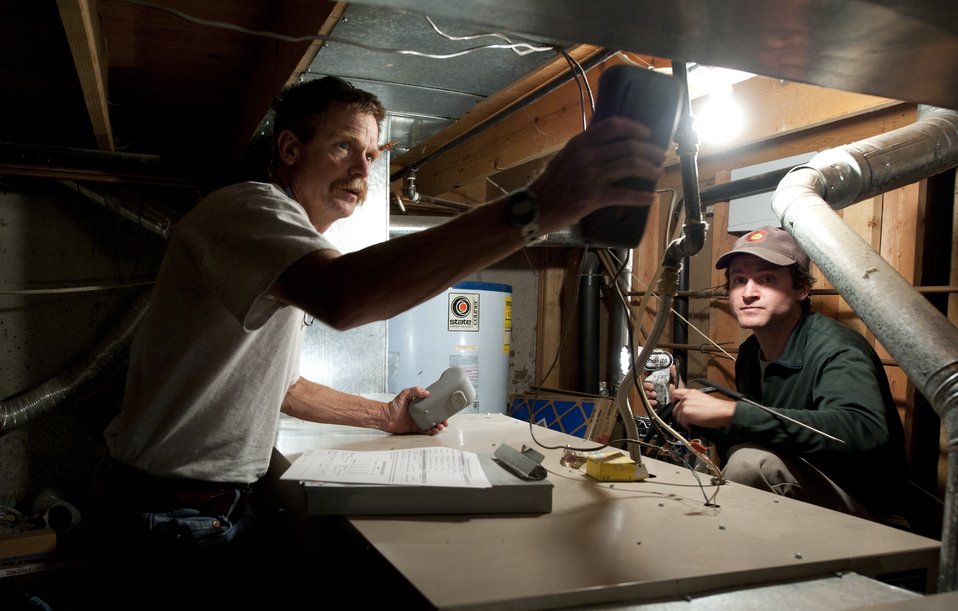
A homeowner is learning how to improve the efficiency of his home as part of an Energy Department program that assists homeowners weatherize their homes.